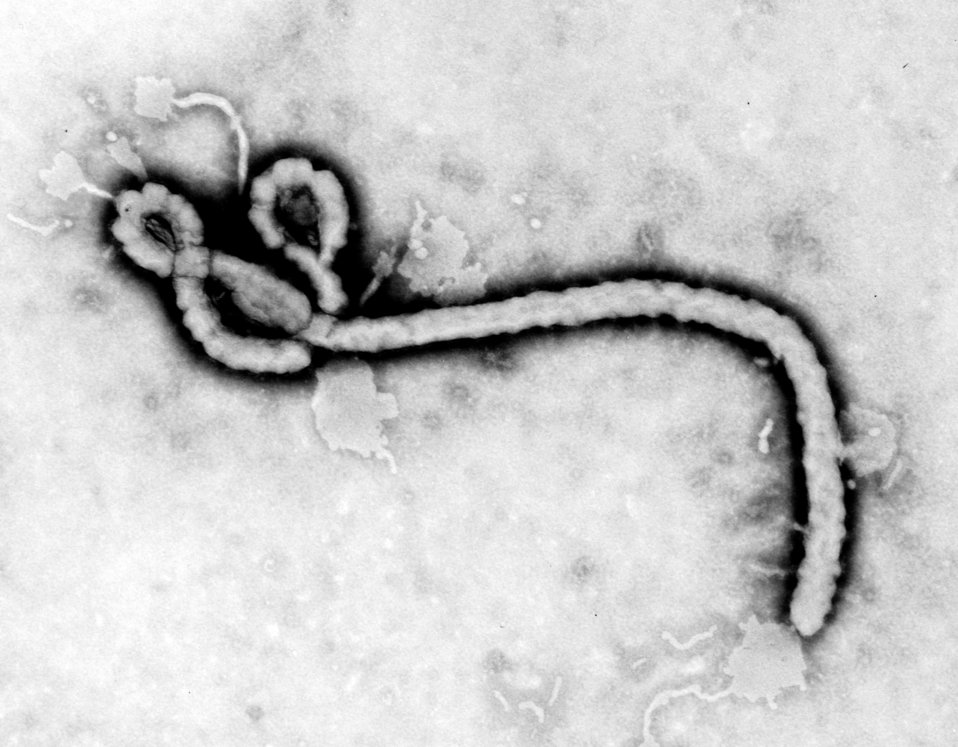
Created by CDC microbiologist Frederick A. Murphy, this transmission electron micrograph (TEM) revealed some of the ultrastructural morphology displayed by an Ebola virus virion. See PHIL 10815 for a colorized version of this image.